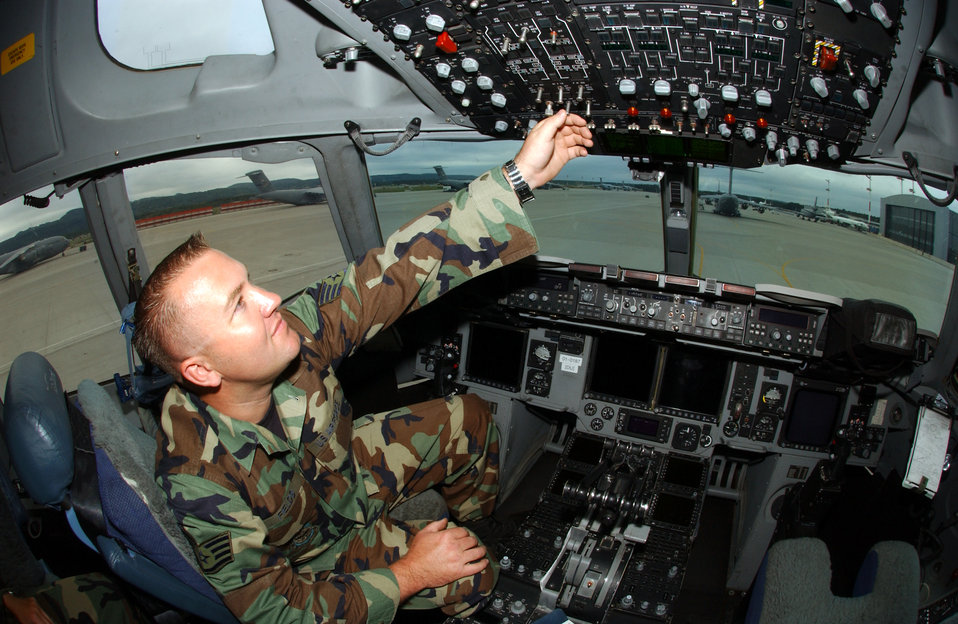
Daily maintenance provides dose of prevention

Staff Sgt. Steve Fields performs routine maintenance on the electrical controls in a C-17 Globemaster III at Ramstein Air Base, Germany on June 22. Sergeant Fields is a propulsion specialist with the 723rd Air Mobility Squadron.